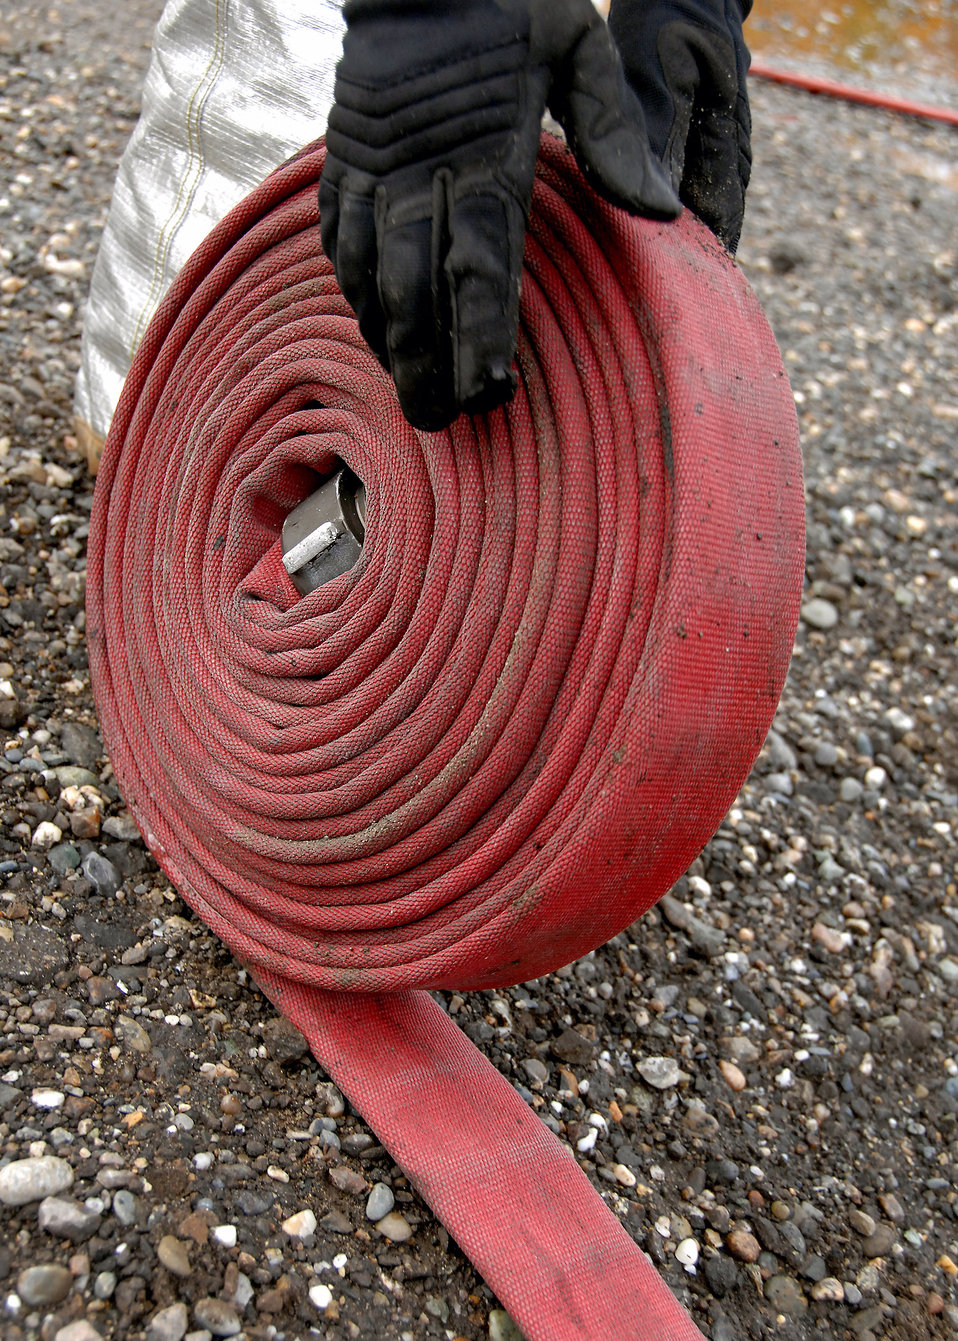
We didn't start the fire...

A firefighter rolls hose during the cleanup following a training operation Sept. 13 at the live fire training area on Eielson Air Force Base, Alaska. The firefighters take out a number of hoses with different lengths to reach the exercise area.